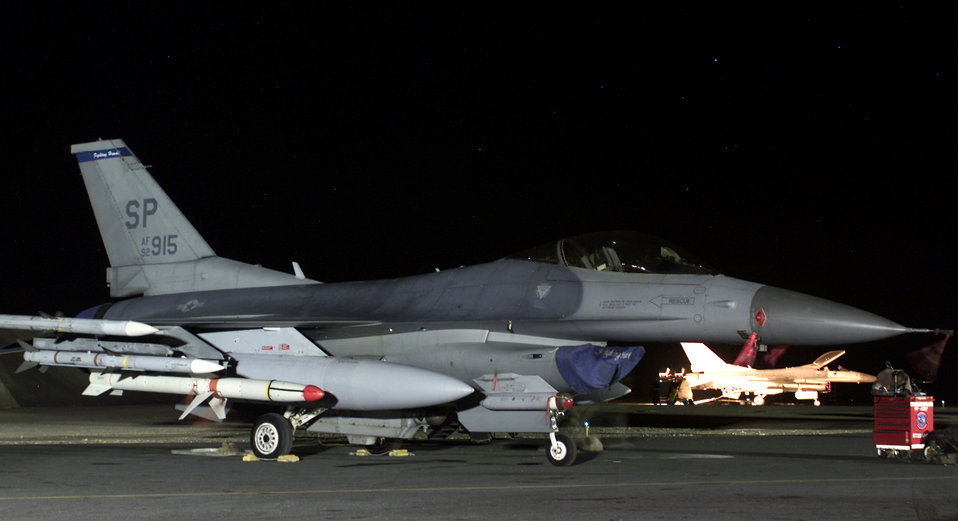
Quiet night

SOUTHWEST ASIA -- An F-16CJ Fighting Falcon sits quietly at night March 20 at a forward-deployed location in Southwest Asia.